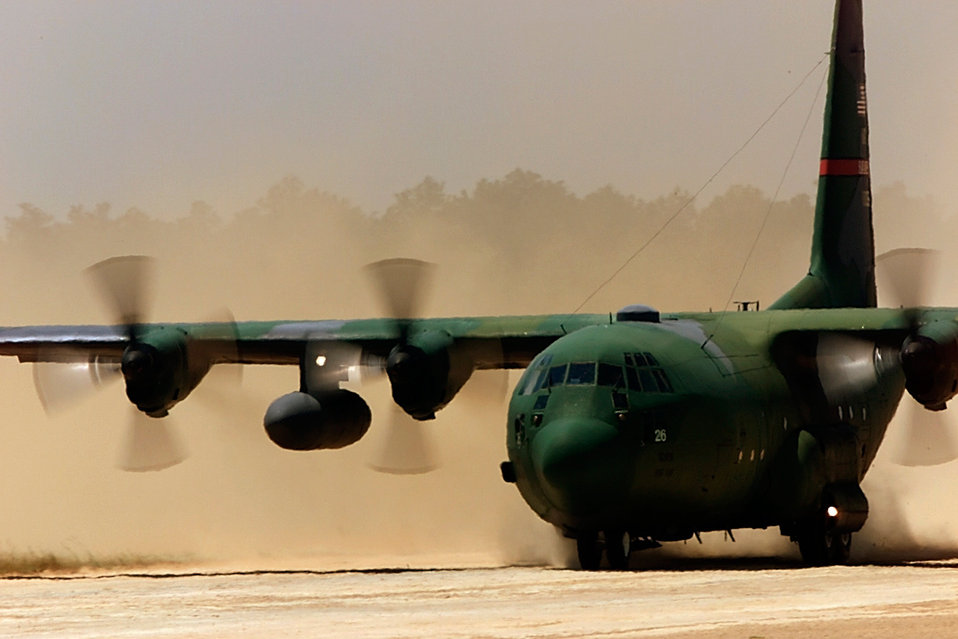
Hercules landing

FORT BRAGG, N.C. -- A C-130 Hercules from the 165th Air Wing, Savannah Ga., performs an assault landing on a dirt landing strip at Holland Drop Zone, here, May 8, 2000. The assault landing competition is part of Rodeo 2000. During Rodeo 2000, teams from all over the world compete in areas including airdrop, aerial refueling, aircraft navigation, special tactics, short field landings, cargo loading, engine running on/offloads, aeromedical evacuations and security forces operations.